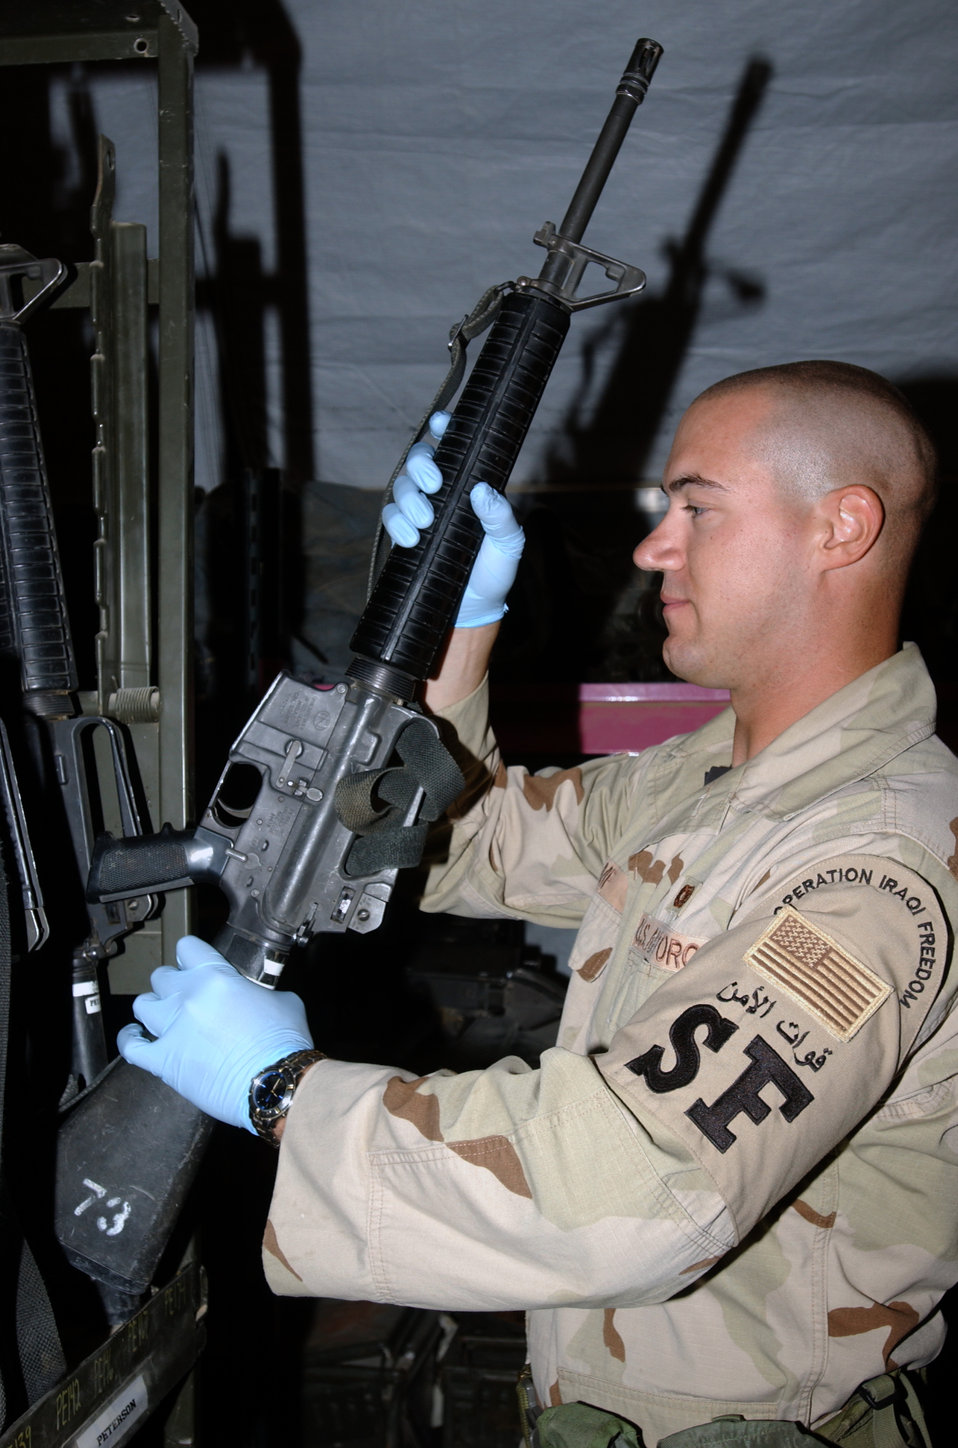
Arming the Airmen

TALLIL AIR BASE, Iraq -- Staff Sgt. Jonathan Samf retrieves an M-16 weapon from the armory shelf for issue to a security forces member taking post for the day here June 10. Sergeant Samf is a security forces Airmen with the 407th Expeditionary Security Forces Squadron